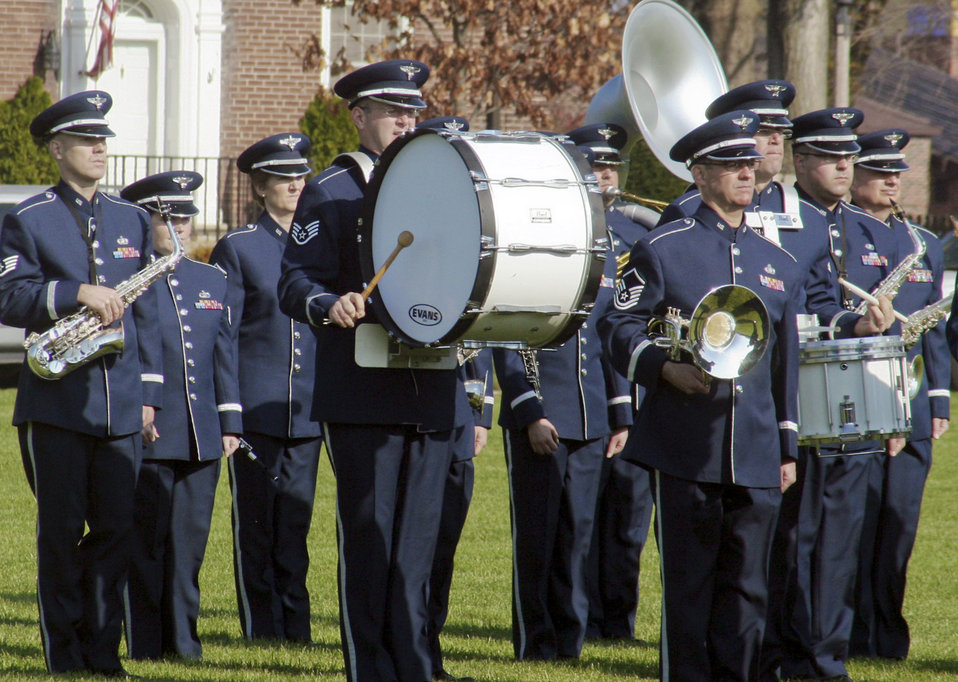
Change to the beat

Members of the U.S. Air Force Band of Mid-America perform during the Air Mobility Command change of command ceremony Nov. 20, 2009, at Scott Air Force Base, Ill. The band played during the ceremony as Gen. Raymond E. Johns took command of AMC.